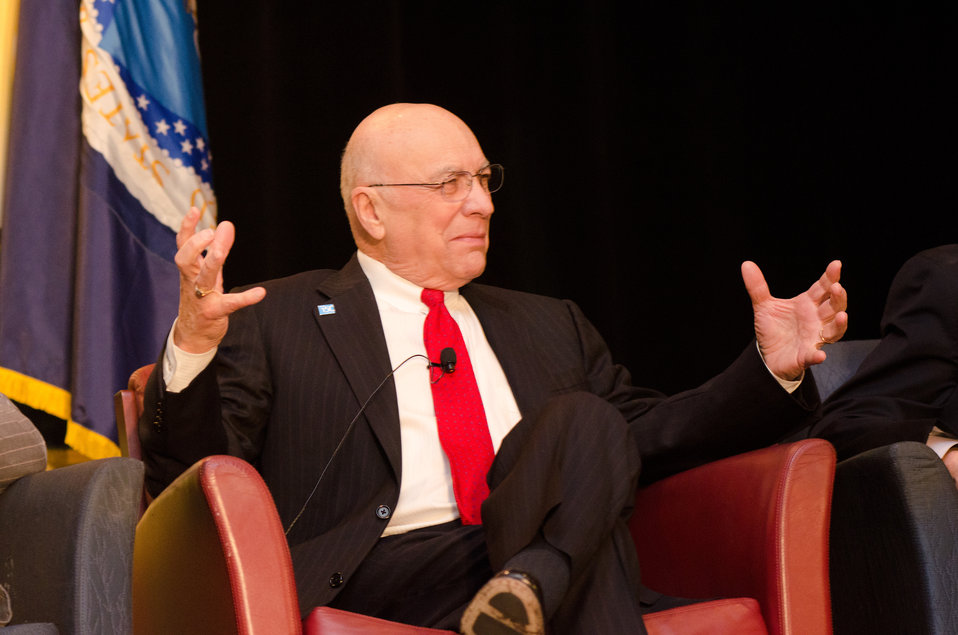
At the 2012 Agricultural Outlook Forum, “Moving Agriculture Forward” in Arlington, VA, held on Thursday, February 23, 2012, 7 former Secretaries of Agriculture sat on the plenary panel “Visions of the Future” hosted by current Agriculture Secretary Tom Vilsack. Clayton Yeutter speaks out during the panel discussions.